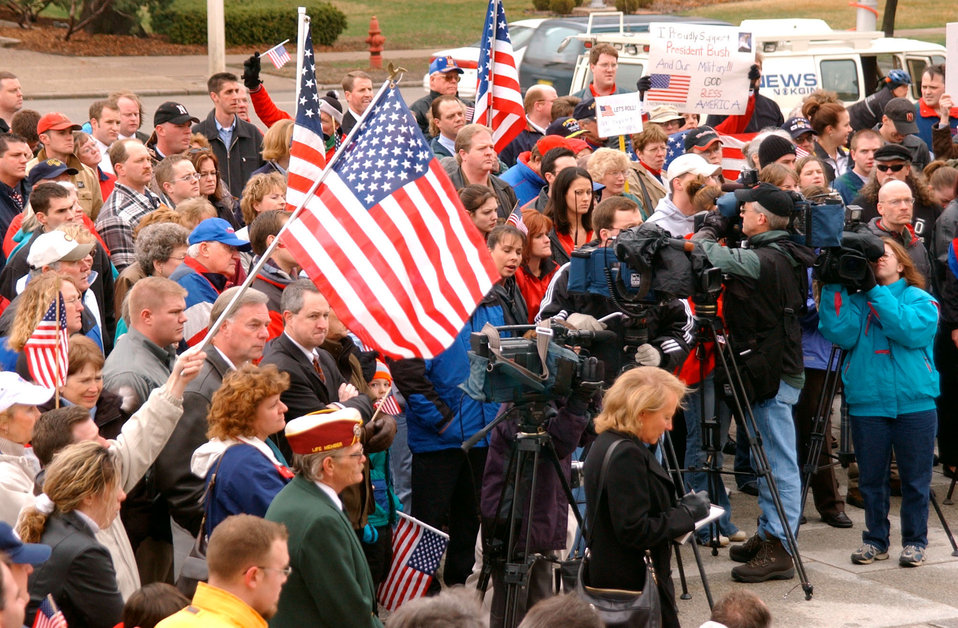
Support for the military

LINCOLN, Neb. -- Local residents gather at the north steps of the state capitol building here to participate in a rally showing support for the military March 20. The rally was put together after the start of the military action of Operation Iraqi Freedom.